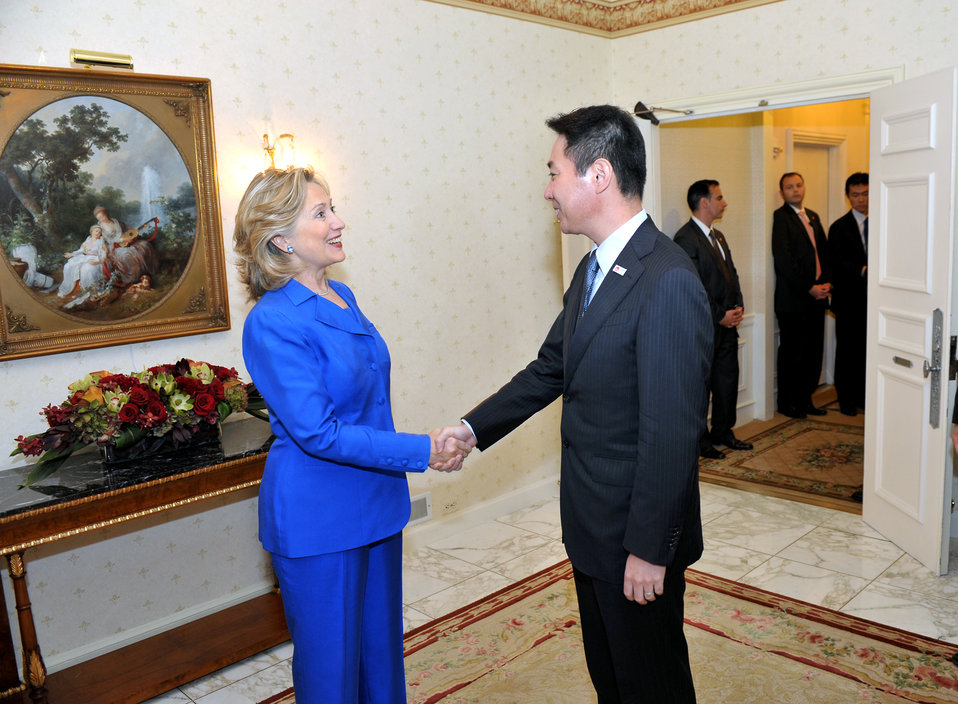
Secretary Clinton Holds a Bilateral With Japanese Foreign Minister Maehara

U.S. Secretary of State Hillary Rodham Clinton shakes hands with Japanese Foreign Minister Seiji Maehara after their bilateral meeting at the Waldorf-Astoria Hotel in New York, New York, on September 23, 2010.